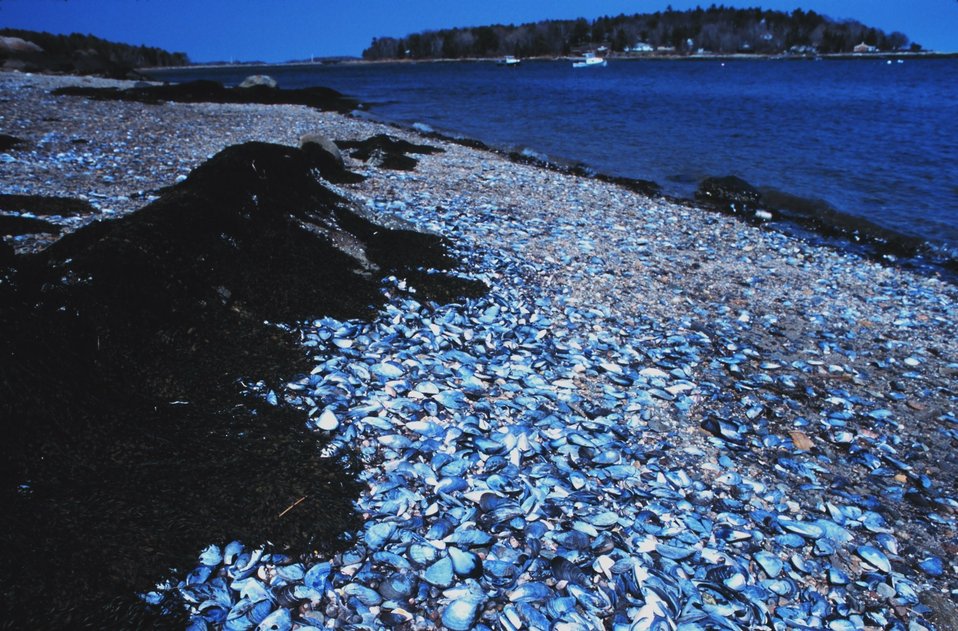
Rocks, seashells, sand, and seaweed